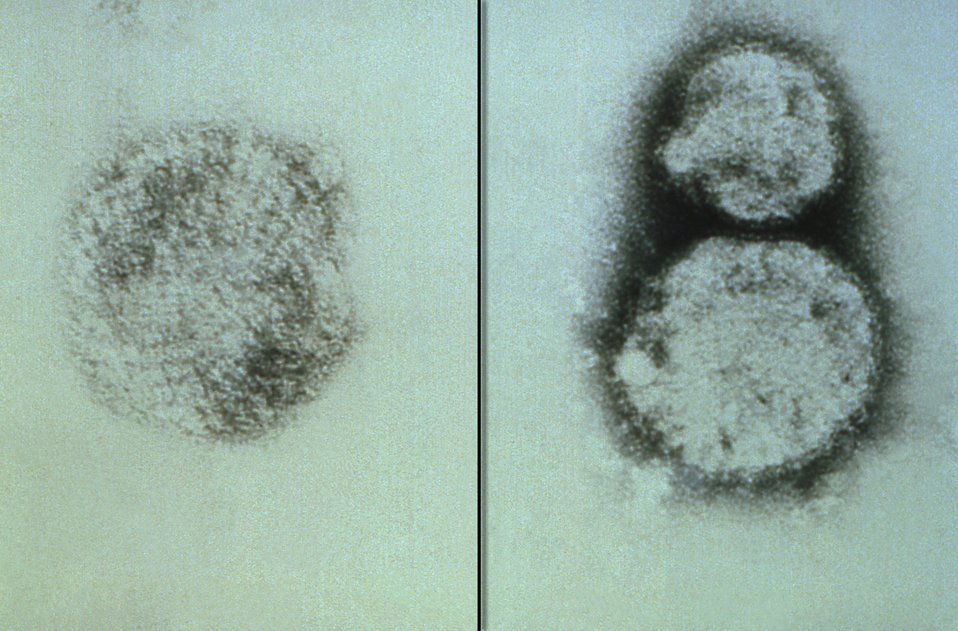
This negatively stained transmission electron micrograph (TEM) depicts three Sin Nombre virus (SNV) virions, which are members of the genus Hantavirus, within the family Bunyaviridae. Hantavirus members are responsible for causing Hantavirus pulmonary syndrome, or HPS. The image was captured using a Philips EM 201 transmission electron microscope.